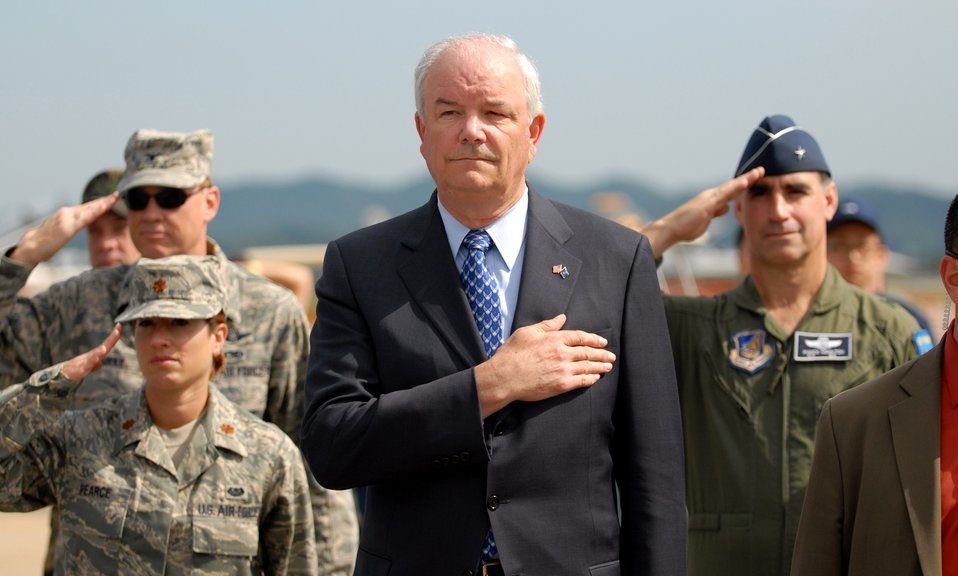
Secretary Wynne: Airmen in Korea have unique experience

Secretary of the Air Force Michael W. Wynne, along with Col. Darryl Burke, Maj. Michelle Pearce and Brig. Gen. Harold W.